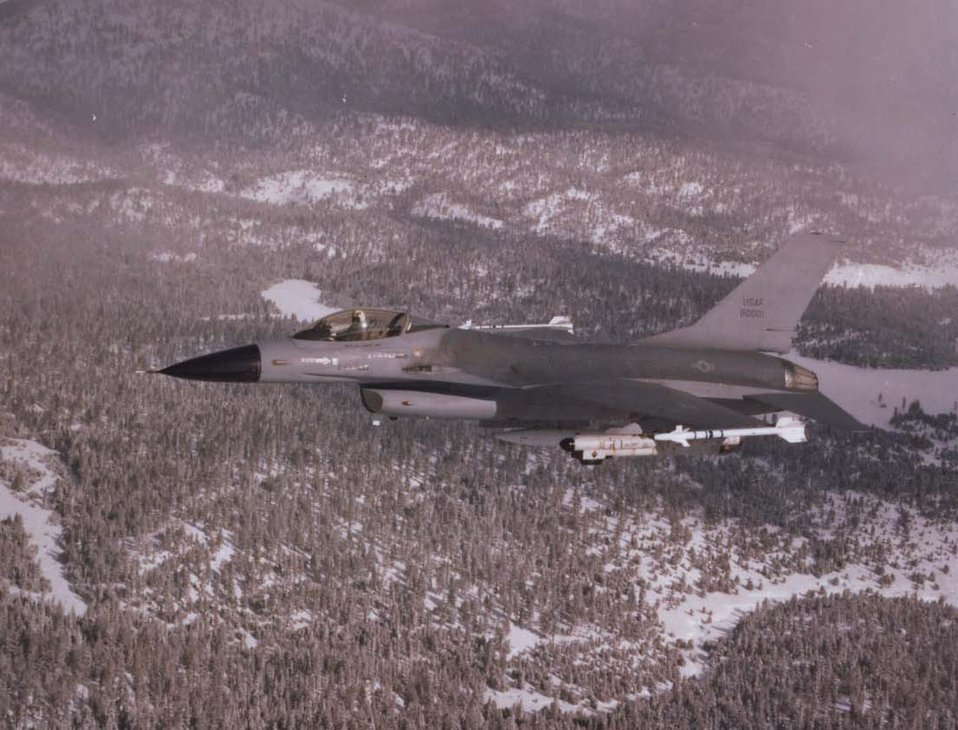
First production F-16A-10

The first production F-16A-10 Fighting Falcon flies a test mission loaded with two AIM-9J Sidewinder missiles, AN/ALQ-119 ECM pod and 300-gallon centerline fuel tank.